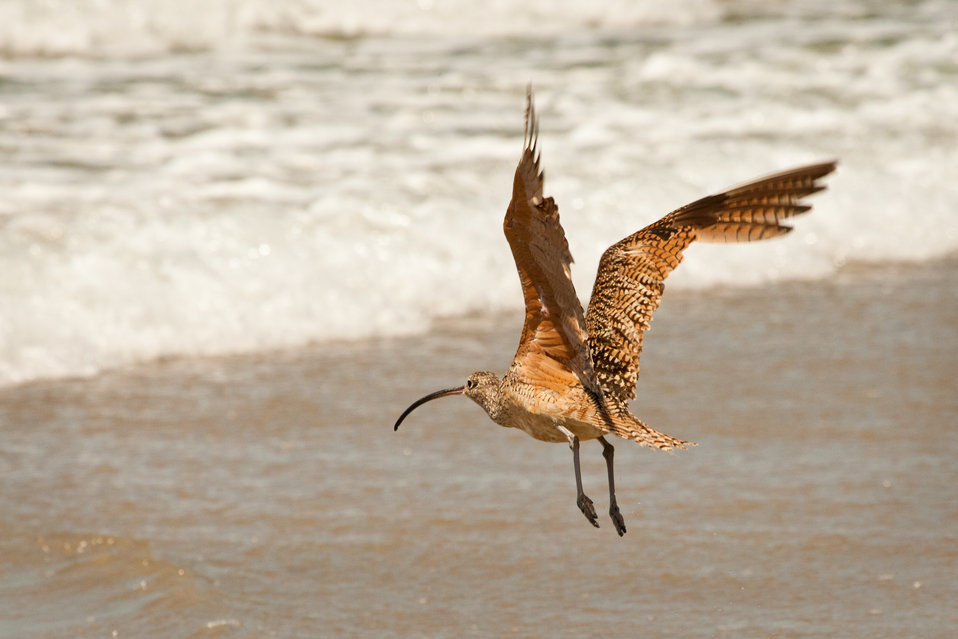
Long-billed curlew

A long billed curlew browsing from place to place along the tideline to search for more mollusks and crustaceans